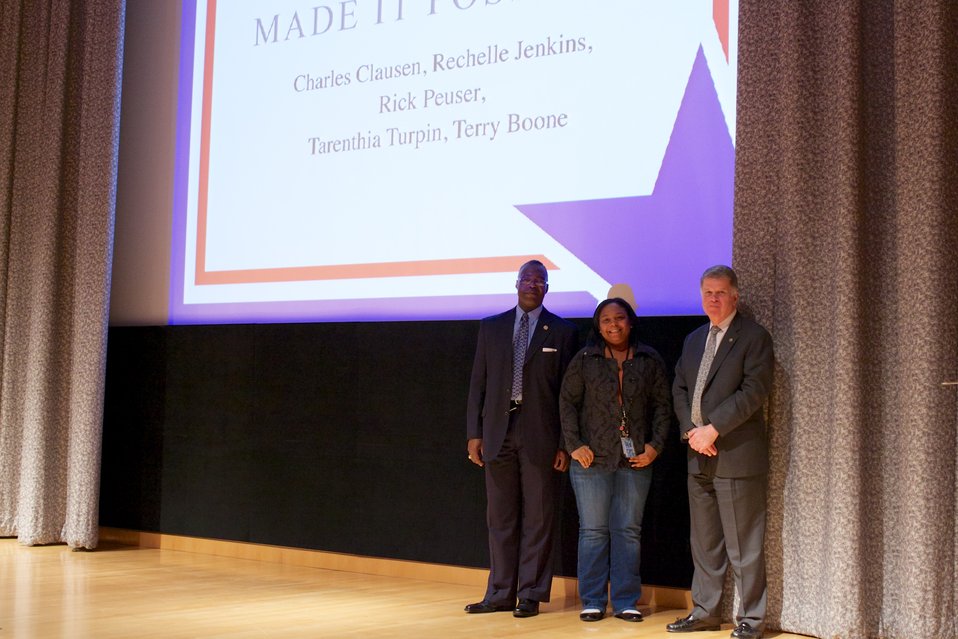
CFC Recognition Event